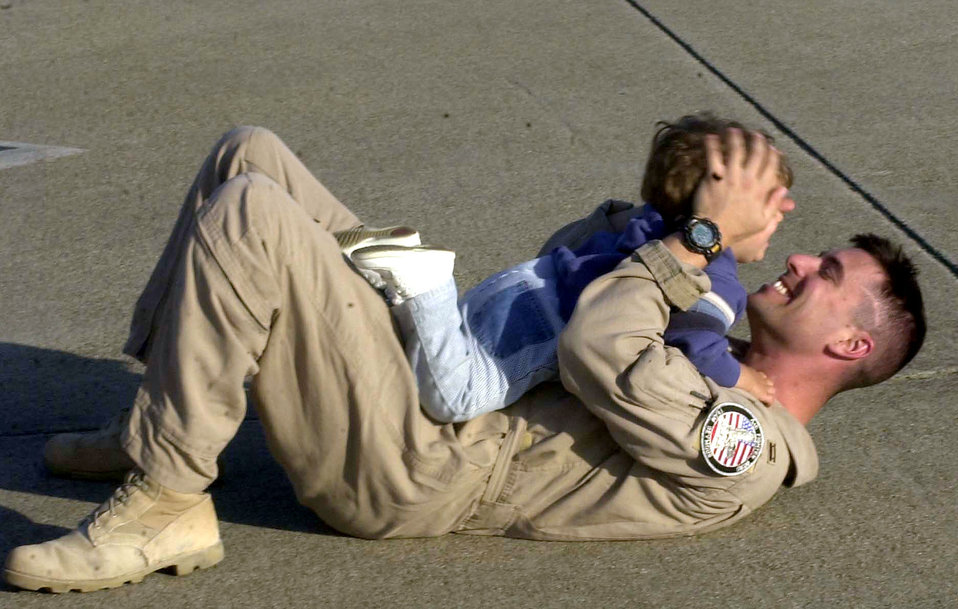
Downtime with dad

SEYMOUR JOHNSON AIR FORCE BASE, N.C. -- Capt. Dan King plays with his 21-month-old son, Nate, after returning from a four-month deployment to Southwest Asia. King is a member of the 336th Fighter Squadron.